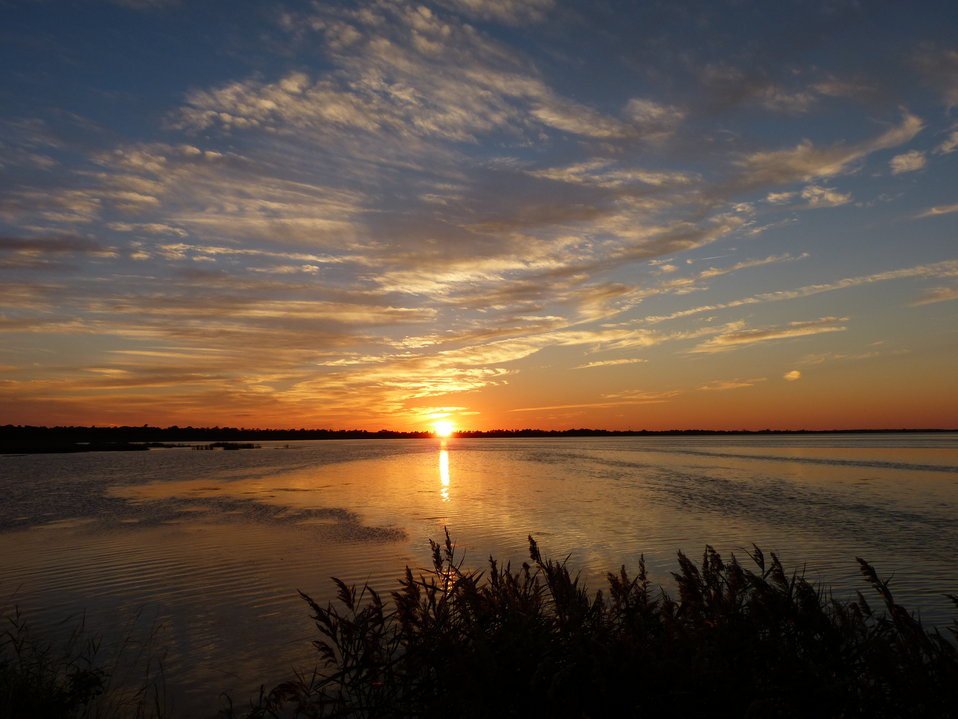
Another beautiful sunset

At Mattamuskeet National Wildlife Refuge in North Carolina.